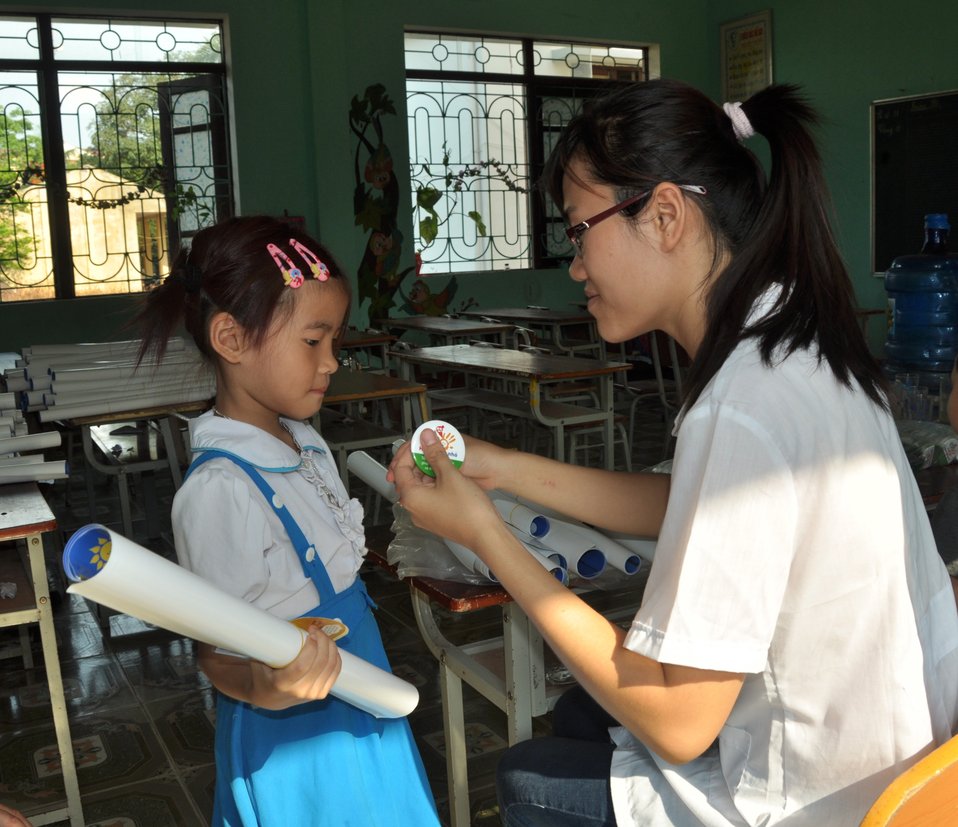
USAID supports deworming education and medication distribution in Bac Giang Province